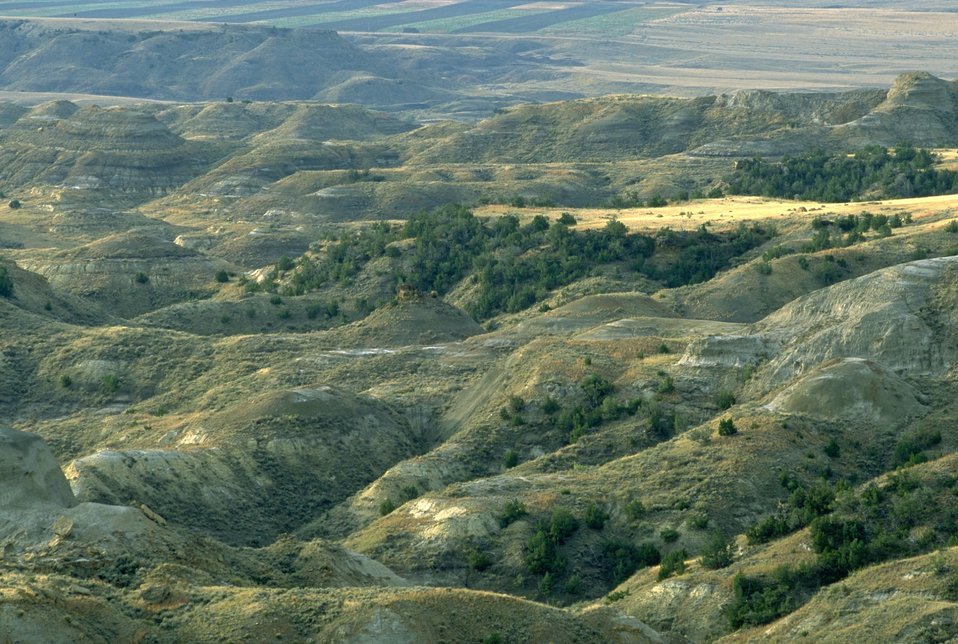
Terry Badlands Wilderness Study Area